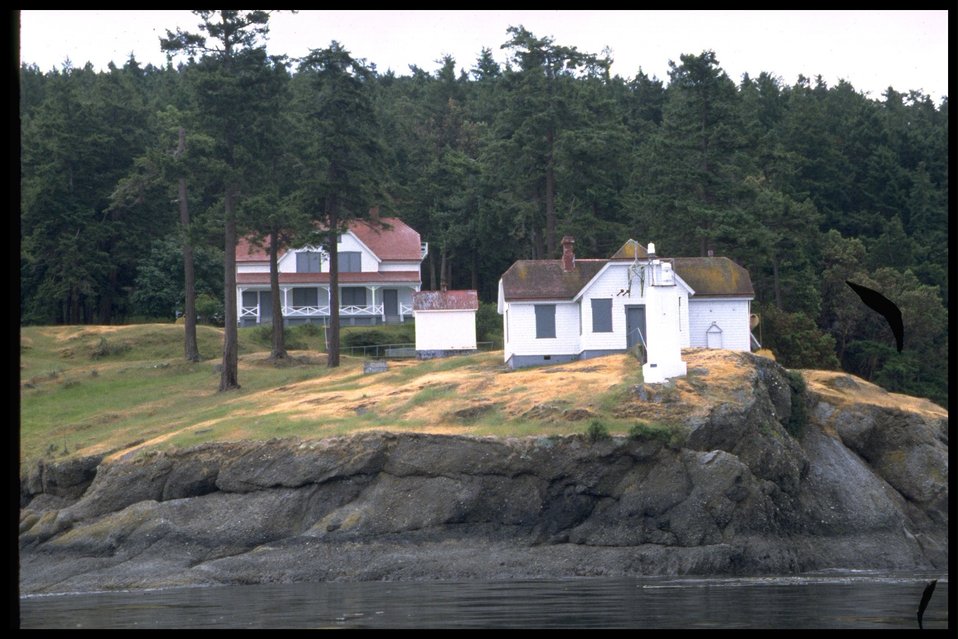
Turn Point from water with light station and buildings. Series of 17 photos.